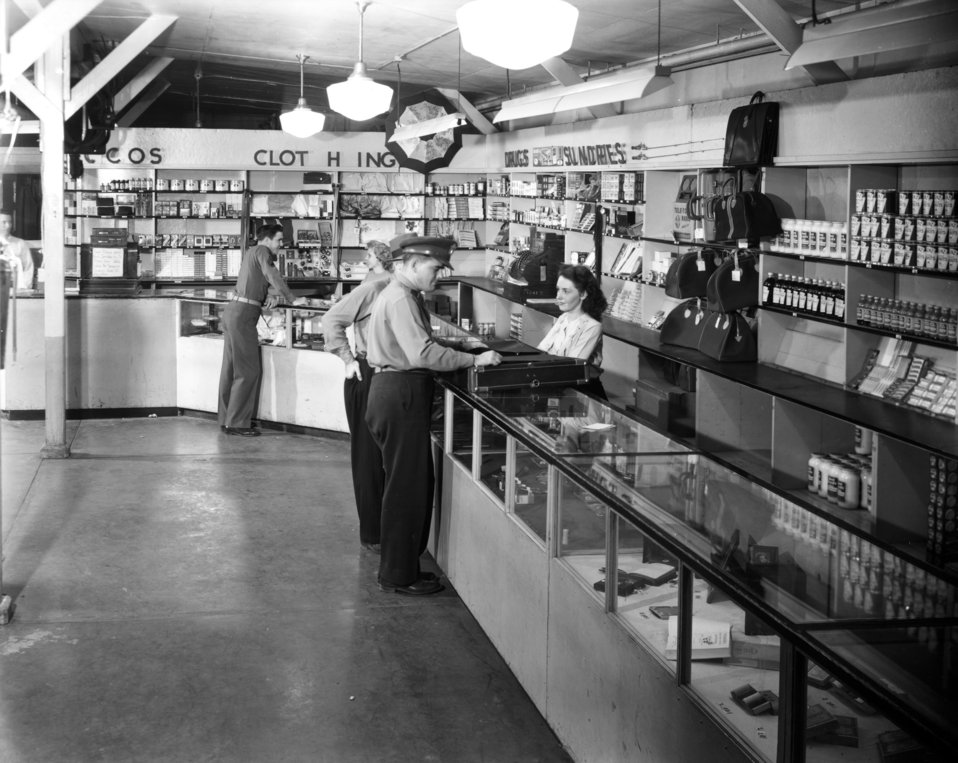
Army activity at Oak Ridge